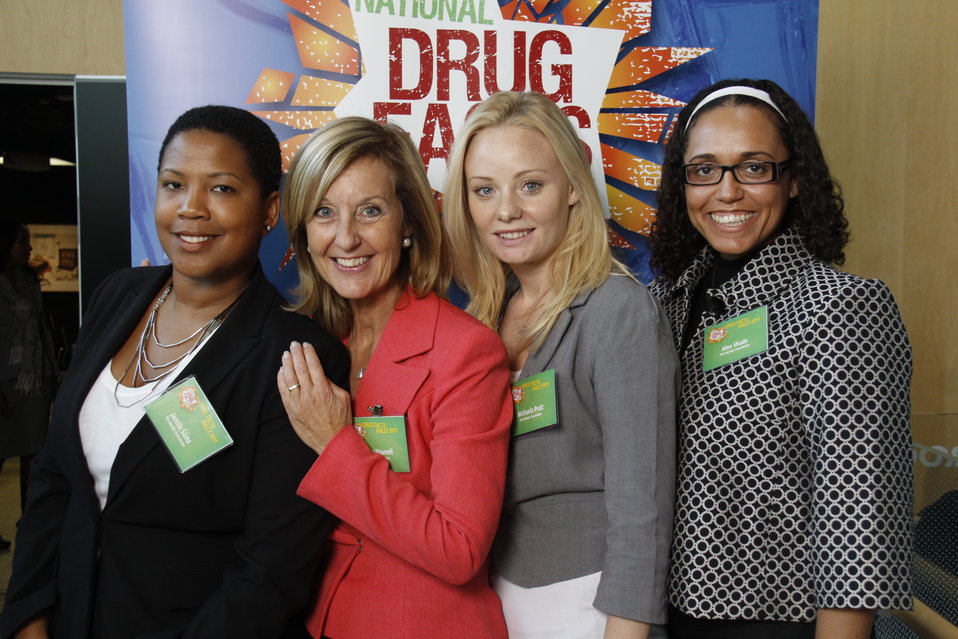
NDFW Mentor Event